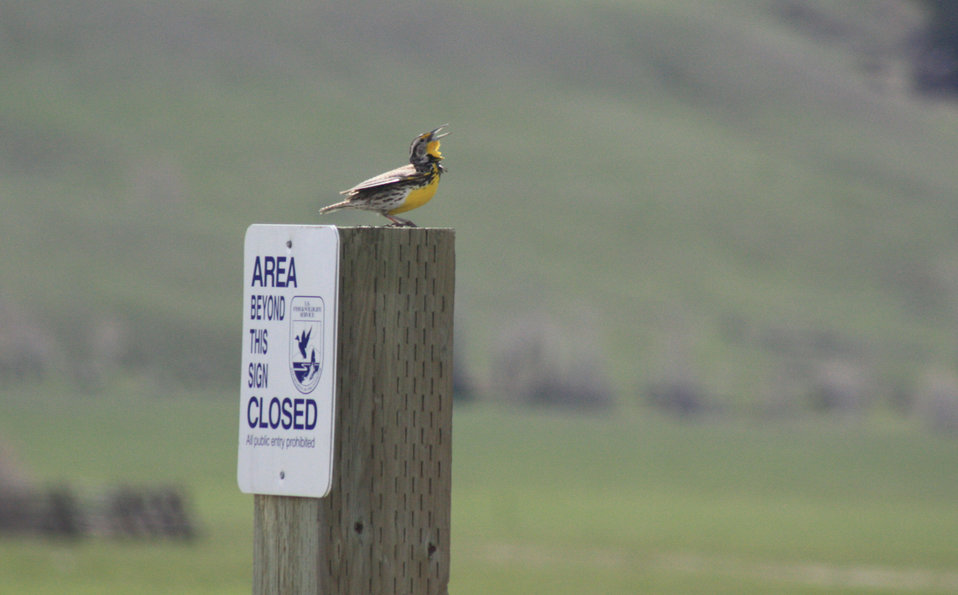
A Flutelike Melody

The State of Wyoming designated the Western Meadowlark as its offiicial state bird in 1927.

In spring and summer, males sing out from atop fence posts, bushes, power lines, and other high points. This bird uses a National Elk Refuge boundary post to stand and deliver its distinctive song.

Credit: USFWS / Ann Hough, National Elk Refuge volunteer